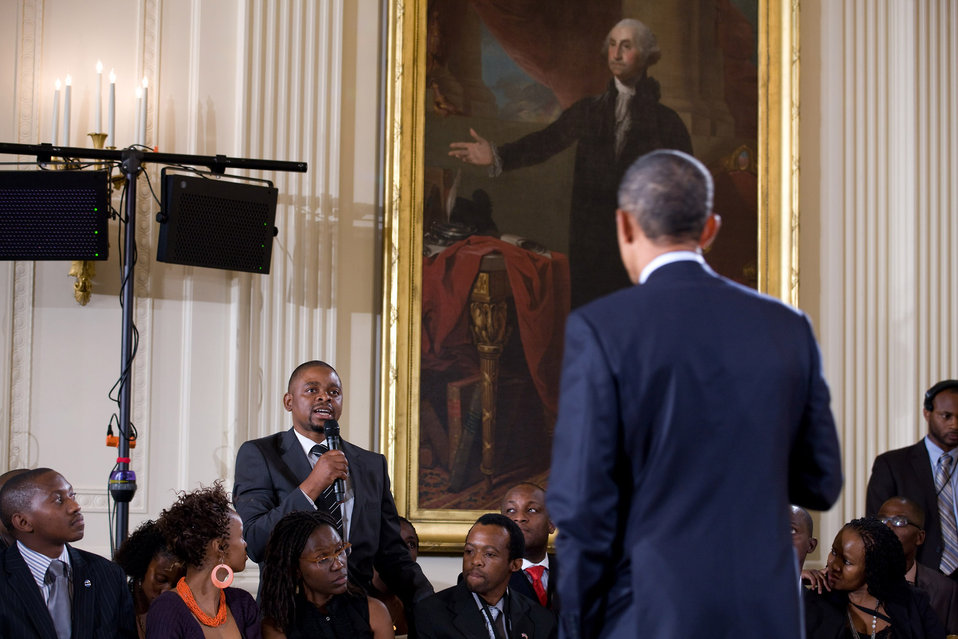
President Obama Listens to a Question from Felix Limani of Malawi

President Barack Obama listens to a question from Felix Limani of Malawi during a town hall-style meeting with young African leaders in the East Room of the White House in Washington, D.C., on August 3, 2010.